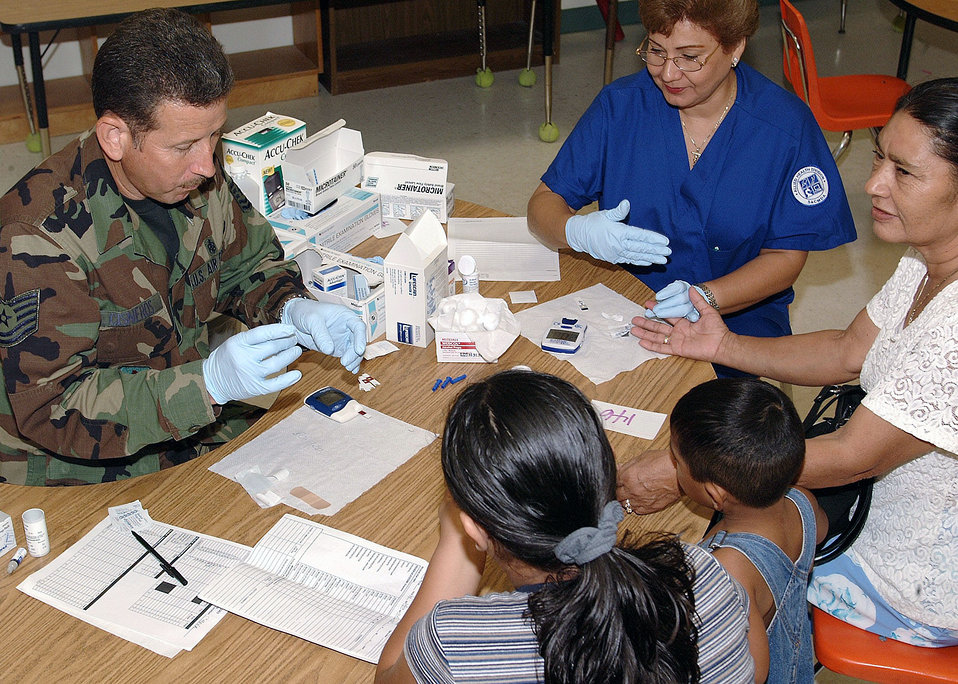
OPERATION LONE STAR (AFPN) -- Tech. Sgt. Gilbert Cisneros Jr., from the Air National Guard's 149th Medical Squadron in San Antonio, checks the blood-sugar levels of Rio Grande Valley residents during Operation Lone Star 2003. For two weeks ending Aug. 2, three elementary schools in south Texas were converted into makeshift clinics where Naval Reserve and Army and Air National Guard people worked together to provide dental and medical assistance to the underprivileged residents of the are.